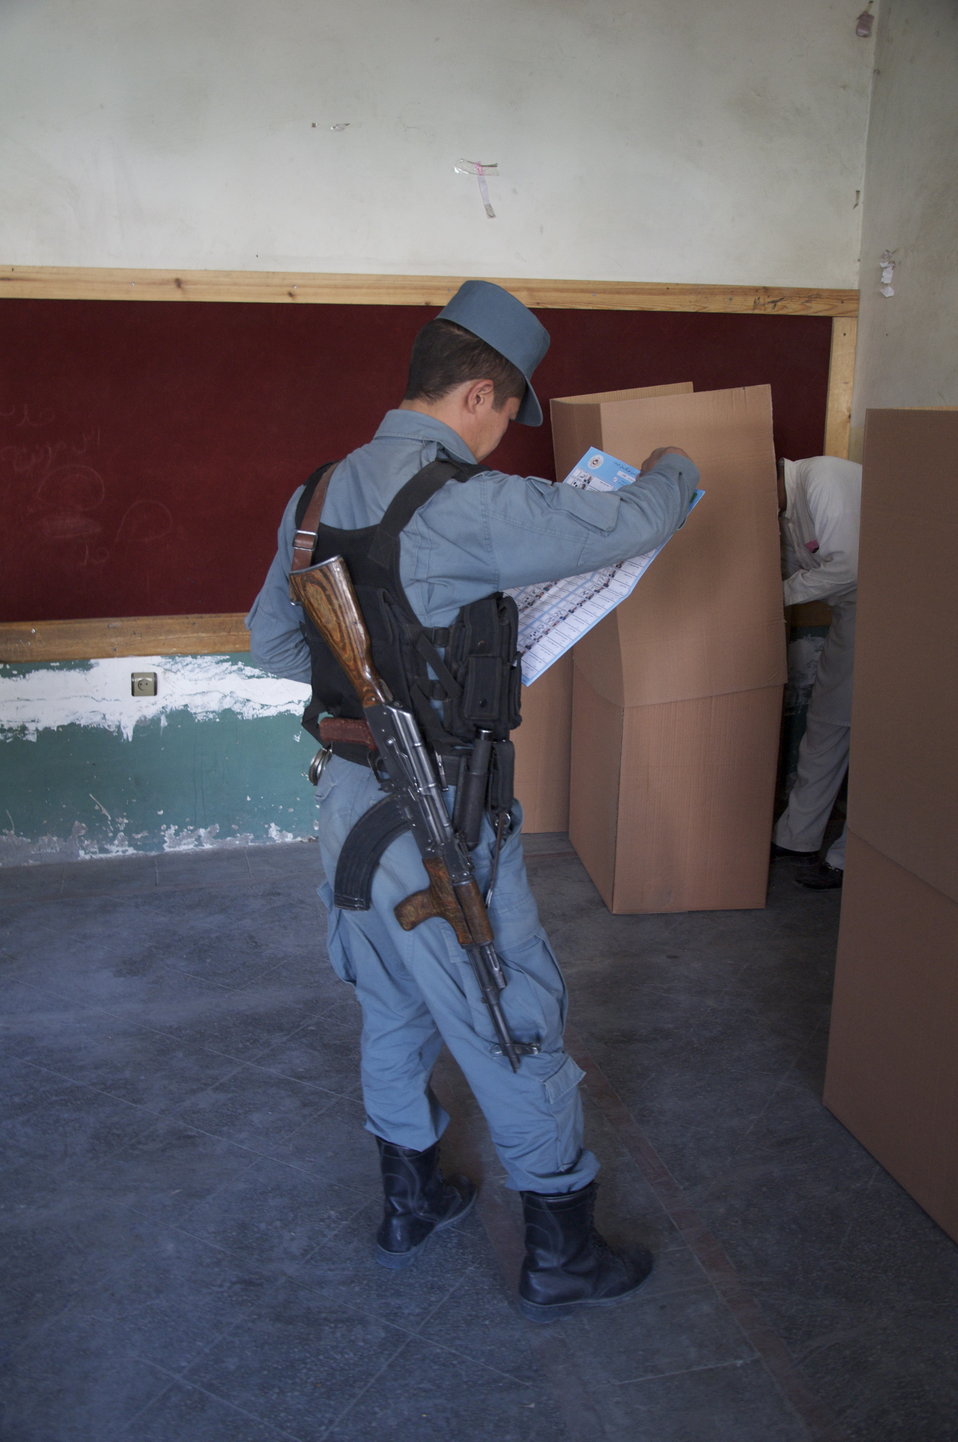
Voter